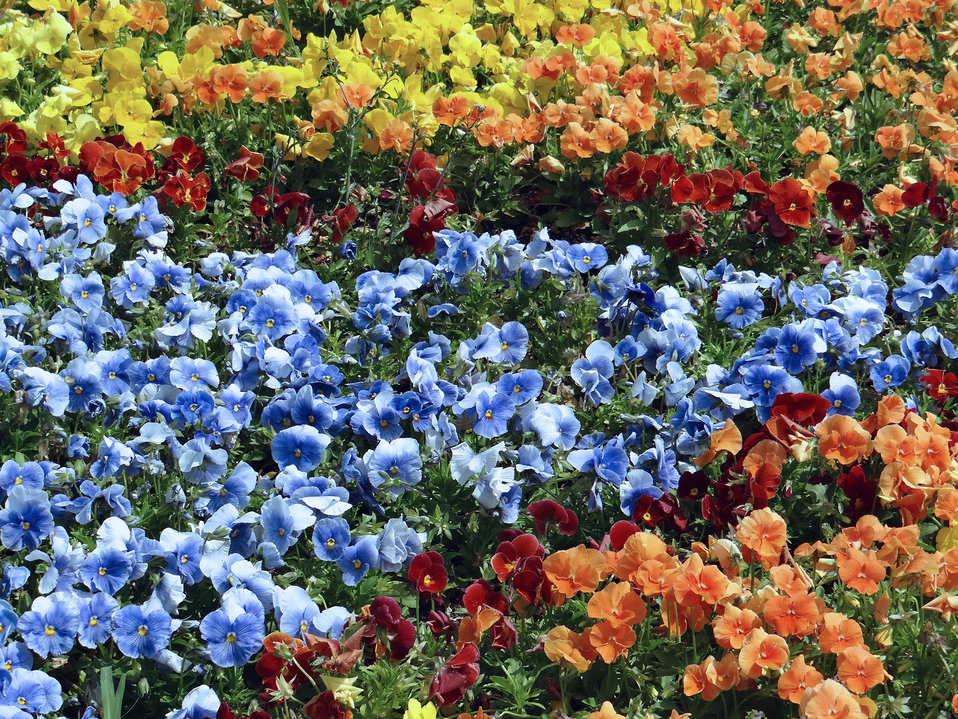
Sea of pansies

A sea of brightly colored pansy flowers..